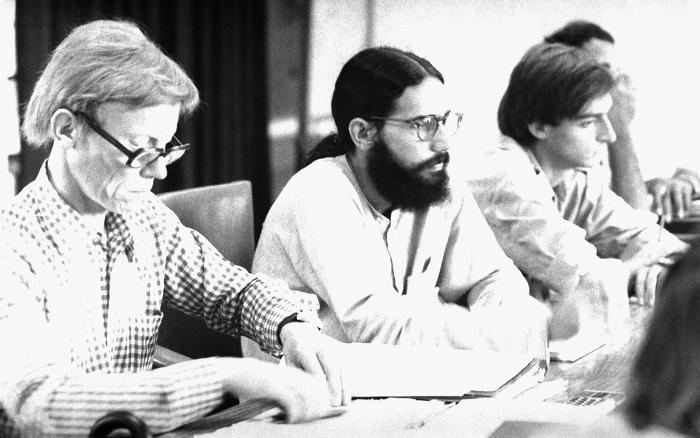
During the Bangladesh smallpox eradication project, in order to maintain a consistent understanding amongst eradication team members as to the progress that was continually being achieved, monthly staff meetings were held. At the meeting pictured here, panel members included a Swedish, American, Dutch, and an Egyptian epidemiologist. The significance of this transcends the obvious, but showed how the world population came together in its attempt to once and for all, rid mankind of this horrible viral disease.